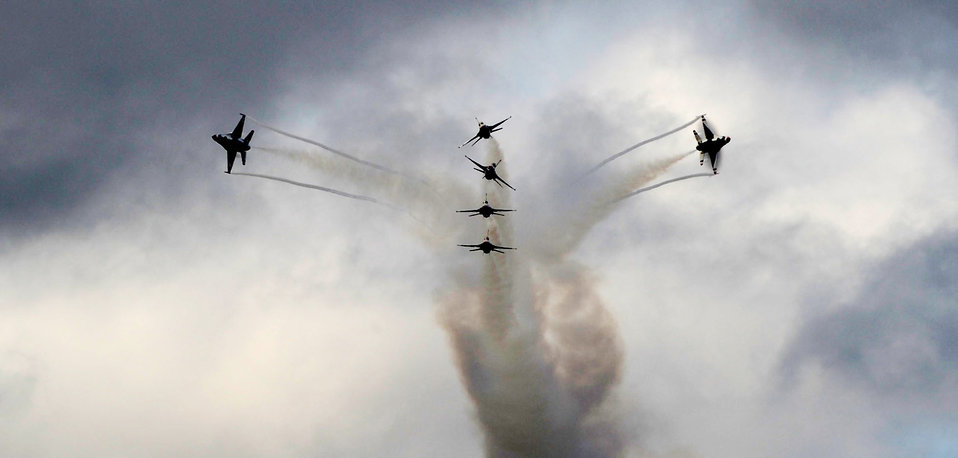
Starburst power

The Air Force Thunderbirds perform a maneuver during the